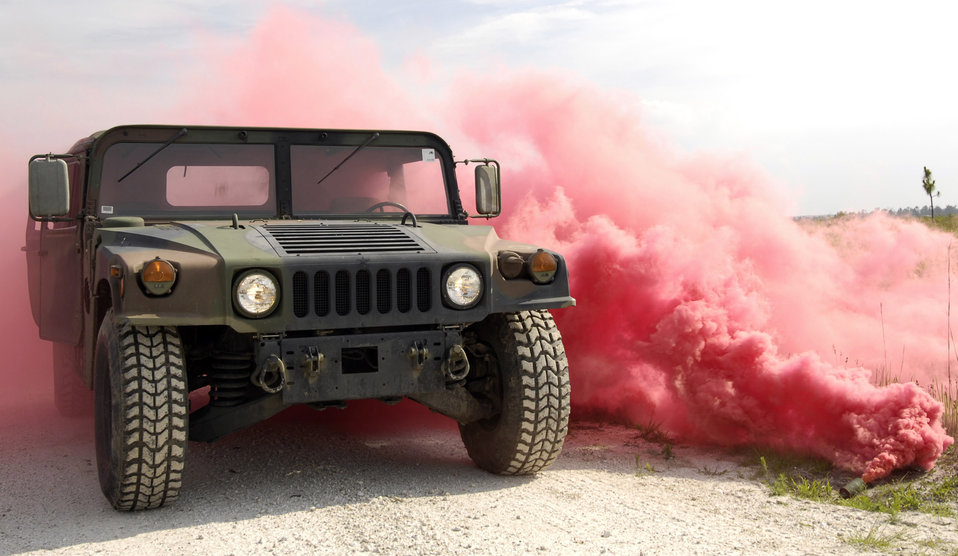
Atlantic Strike VII

Red smoke explodes onto a vehicle during the Atlantic Strike VII training exercise June 16 at Avon Park Air Ground Training Complex, Avon Park, Fla. The red smoke symbolizes that the entire group of personnel in the vehicle are dead. Atlantic Strike is a joint-forces training event involving joint terminal attack controllers from the Army, Air Force and Marines held semi-annually.